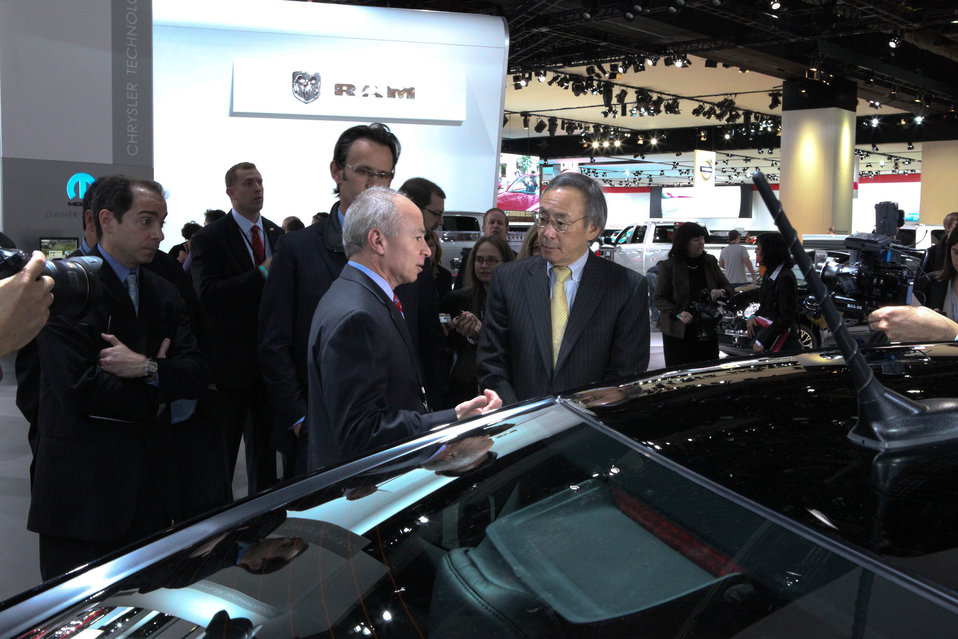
Energy Secretary Steven Chu chatting with a Dodge representative about most current technology.